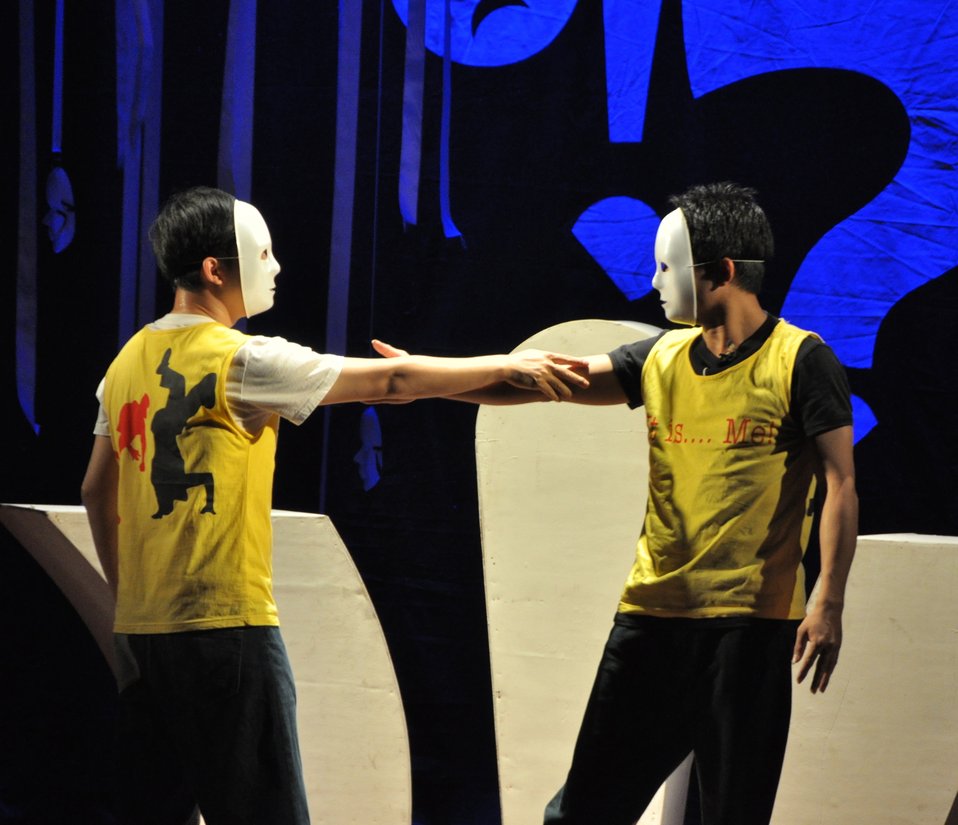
PEPFAR Musical Questions and Exclamations

Hanoi, May 17, 2013